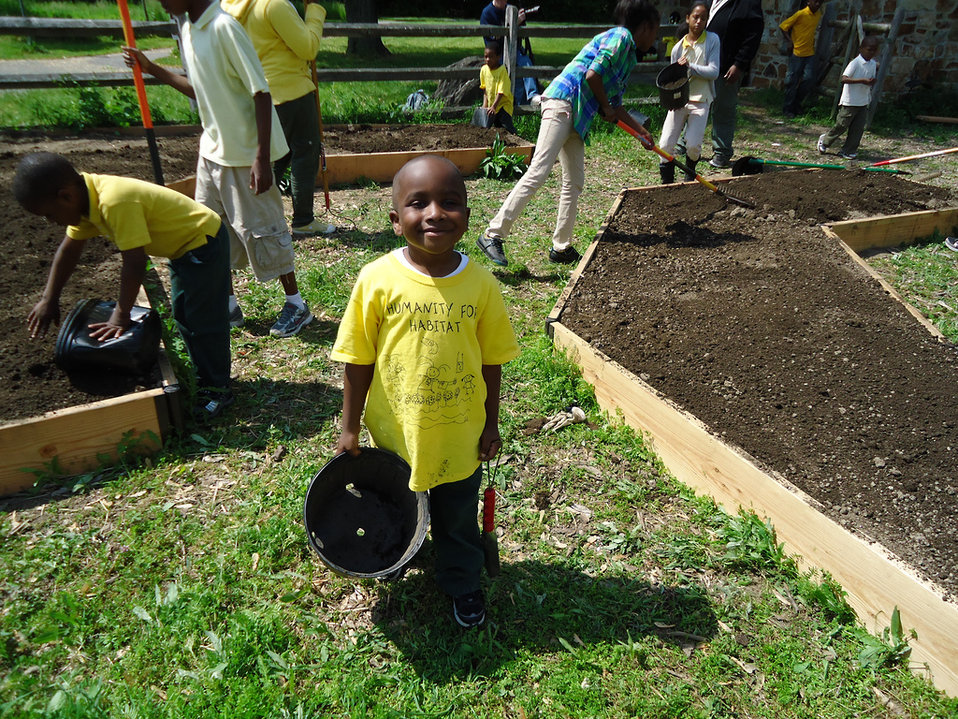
John Heinz National Wildlife Refuge, PA

Planting a pollinator garden